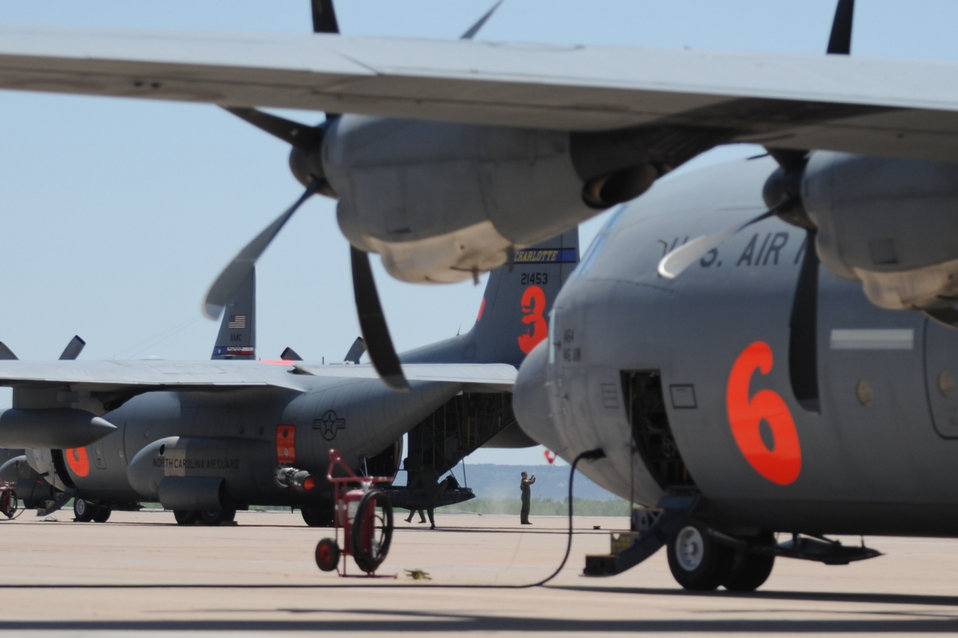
Firefighting

Airmen prepare several C-130 Hercules for wildfire fighting operations across Texas April 18, 2011, at Dyess Air Force Base, Texas. These C-130s are equipped with Modular Airborne Firefighting Systems, which are capable of dispensing 3,000 gallons of water or fire retardant in less than 5 seconds. The wildfires have spread across parts of Texas and have burned more than 1,000 square miles of land.